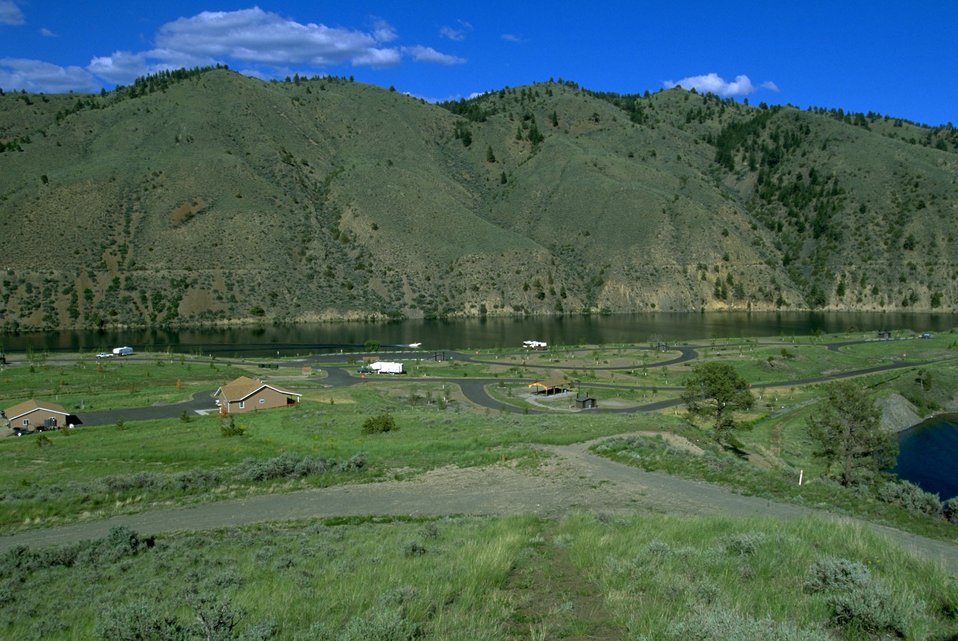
Devils Elbow Campground on Hauser Lake